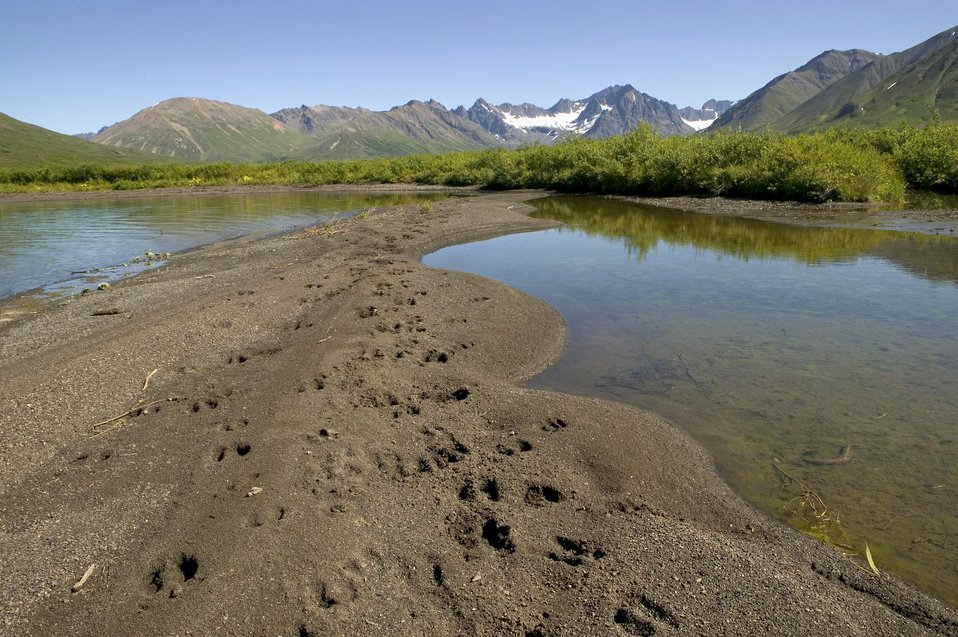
Togiak Nation Wildlife Refuge